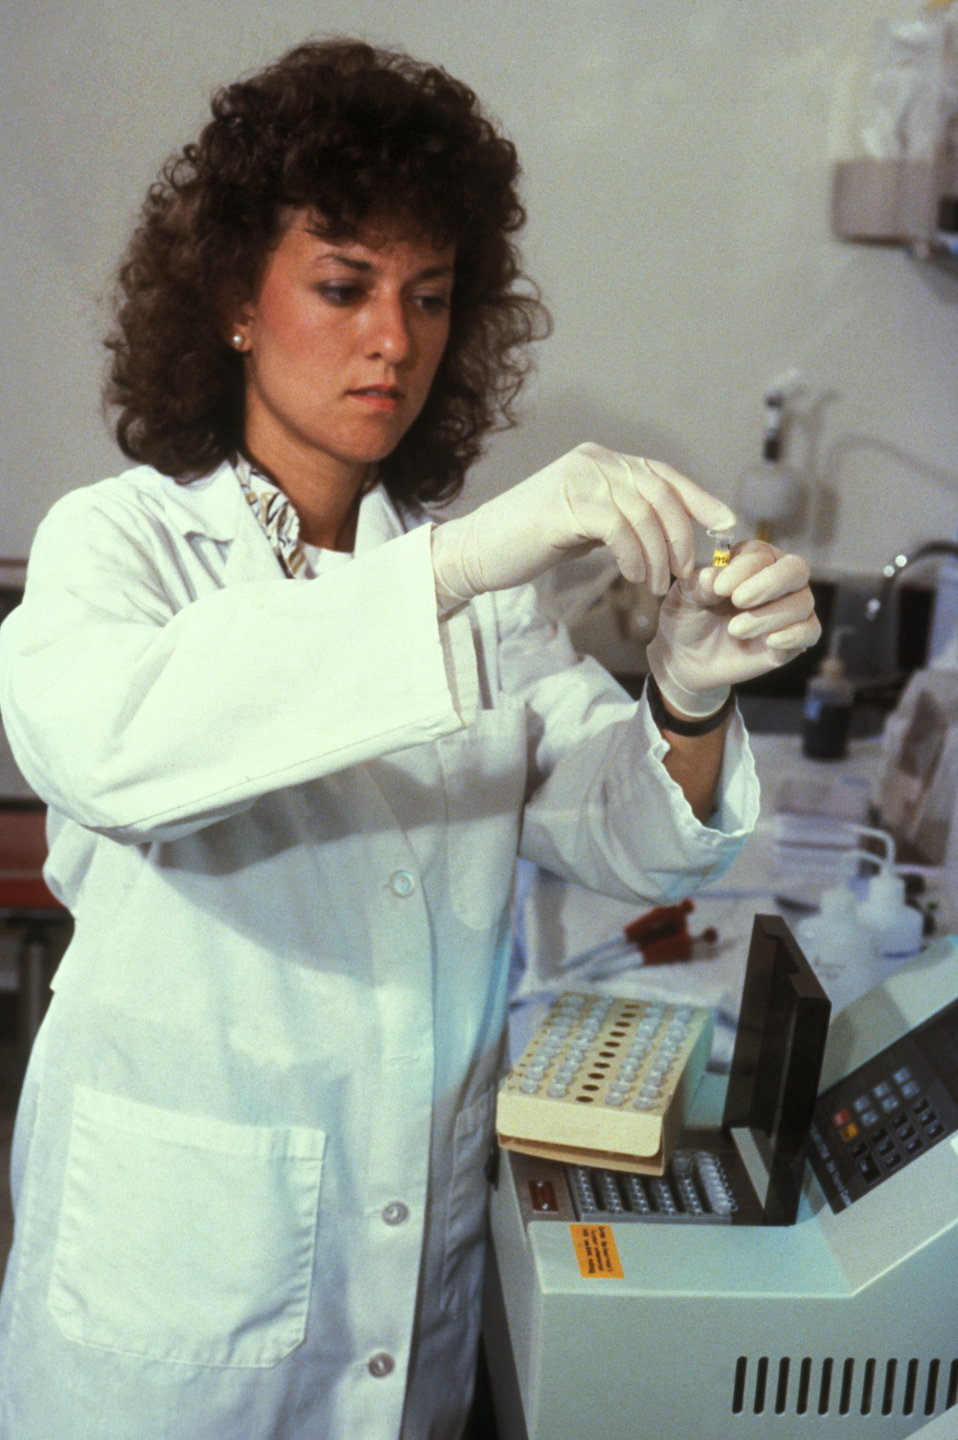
This CDC lab technician is carrying out AIDS research during 1988 laboratory studies.